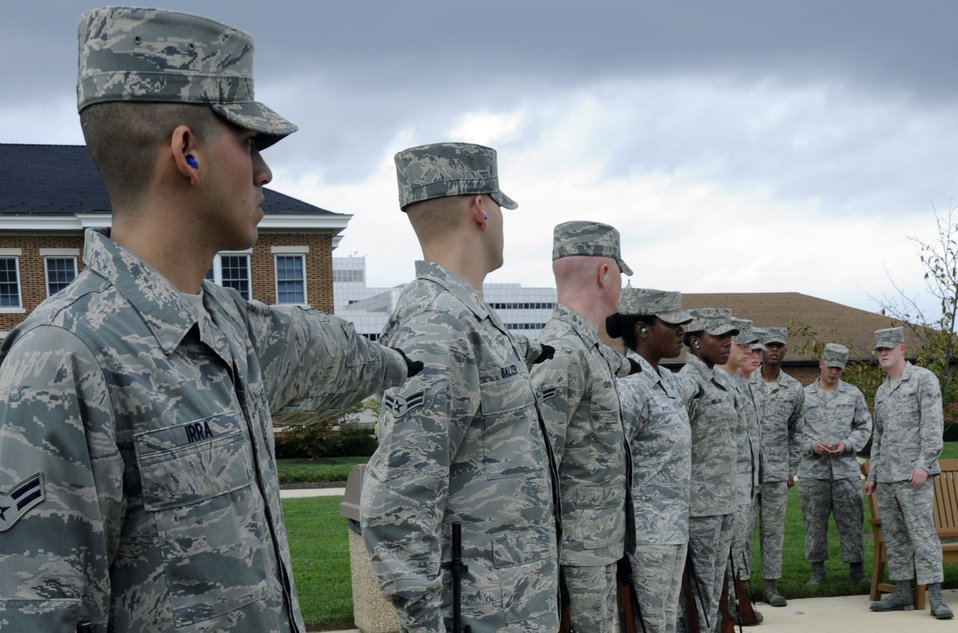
Honor Guard exhibits excellence, represents service

Airman 1st Class Robert Barnhart observes members of the U.S. Air Force Honor Guard's firing party as they practice drill movements, Oct. 25, 2010, at Bolling Air Force Base, D.C. Airman Barnhart is a firing party trainer with the USAF Honor Guard.